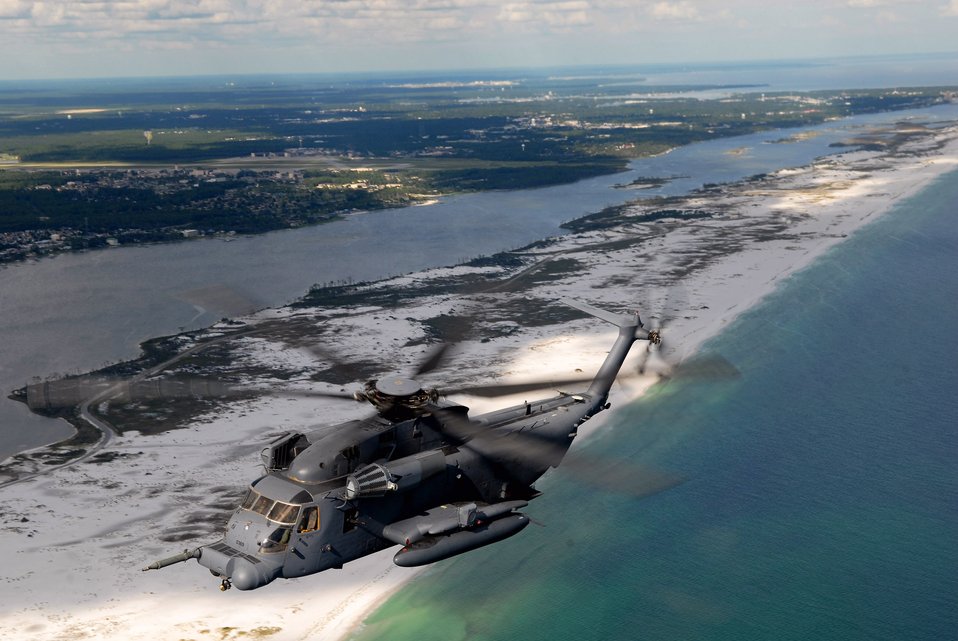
Taking a bow

An MH-53 Pave Low flies over the coastline near Hurlburt Field, Fla., Aug. 20. The helicopter, assigned to the 20th Special Operations Squadron, flies long-range missions for infiltration, exfiltration and resupply of special operations forces, and will retire in October.